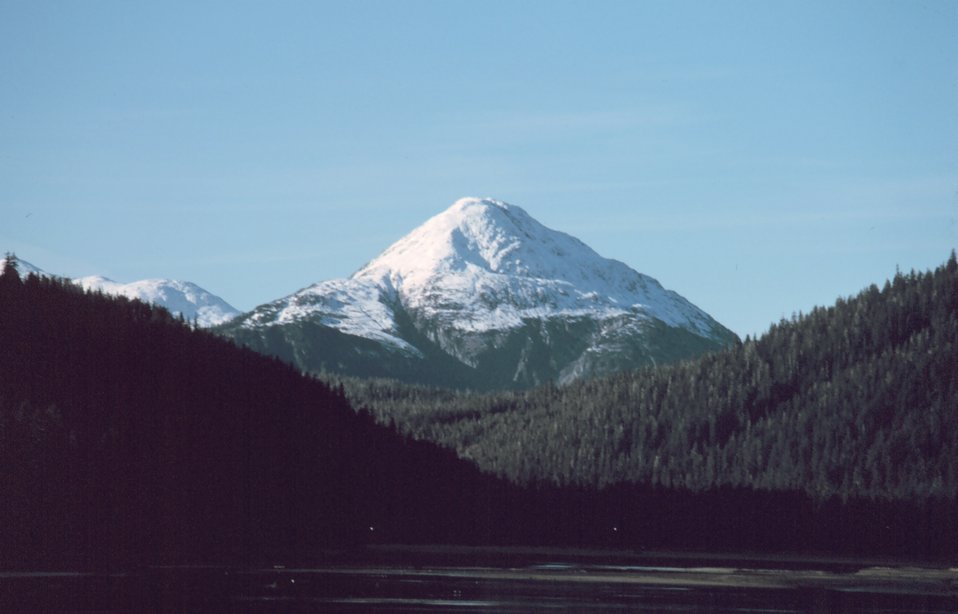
Telephoto view to the west from The Portage at the headwaters of Tenakee Inlet.